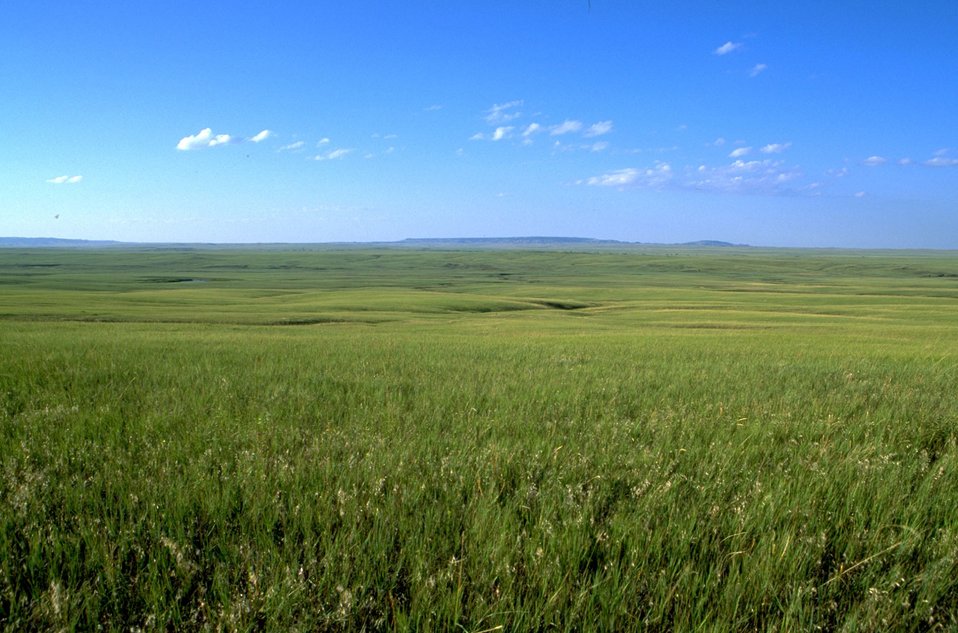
Grassland Vista